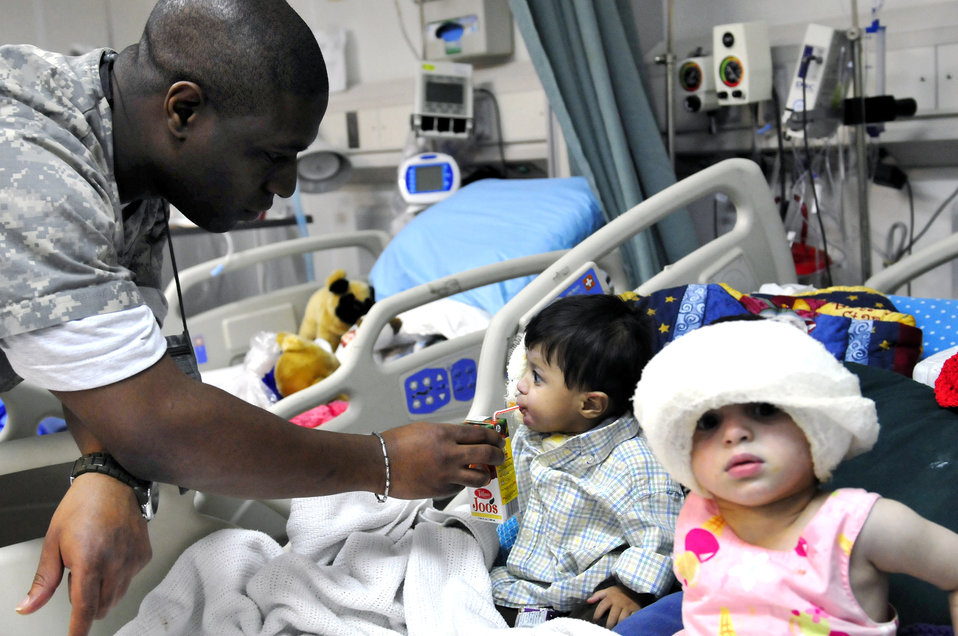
Family treated at CJTH

Staff Sgt. Dequijamin Roberson tends to Ajamal and Satara Hazrat Jan 9, 2011. The two were patients at the Craig Joint Theater Hospital at Bagram Airfield, Afghanistan, after they and several family members were badly injured when a propane tank used to heat their home exploded. Sergeant Roberson is a medical technician assigned to the 455th Expeditionary Medical Operation Squadron.